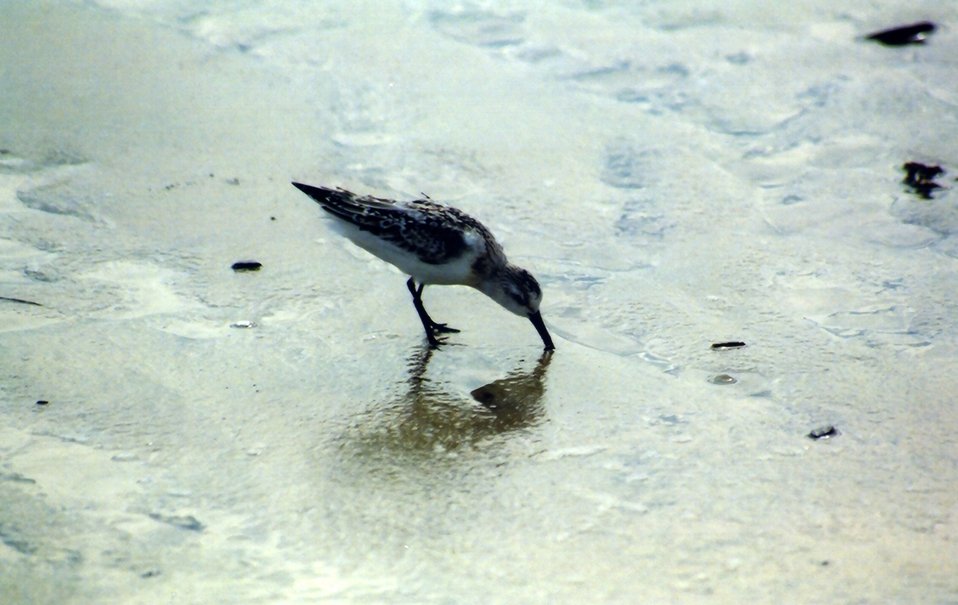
Sandpiper looking for lunch along a Gulf of Mexico beach.